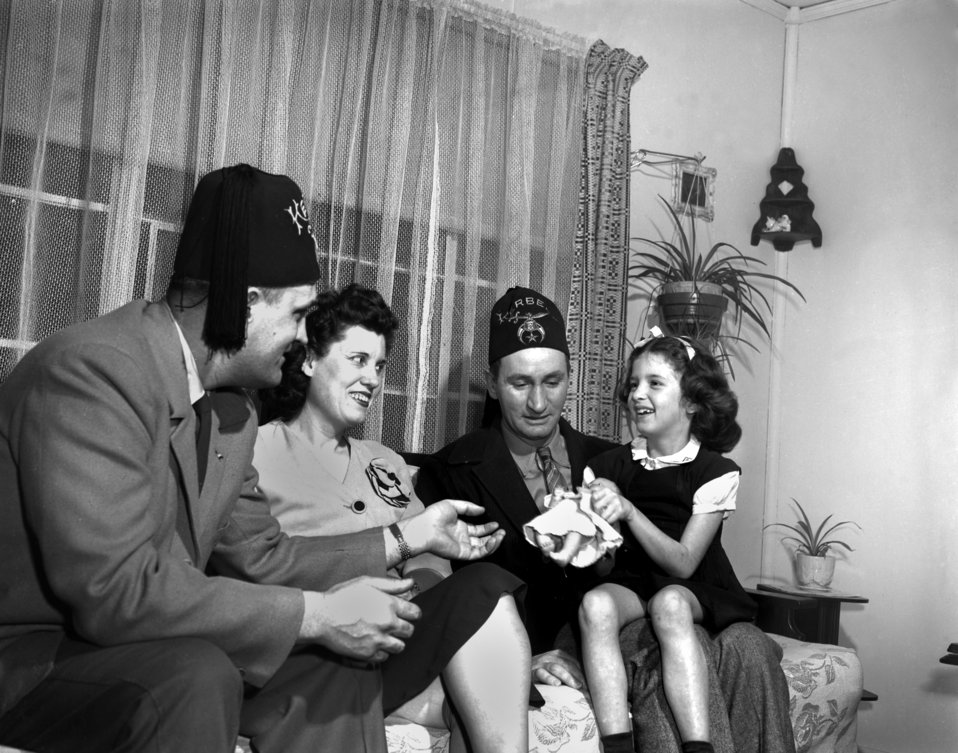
Shrine Club Oak Ridge

3268-2b DOE Photo Ed Westcott 1-24-1947 Oak Ridge Tennessee